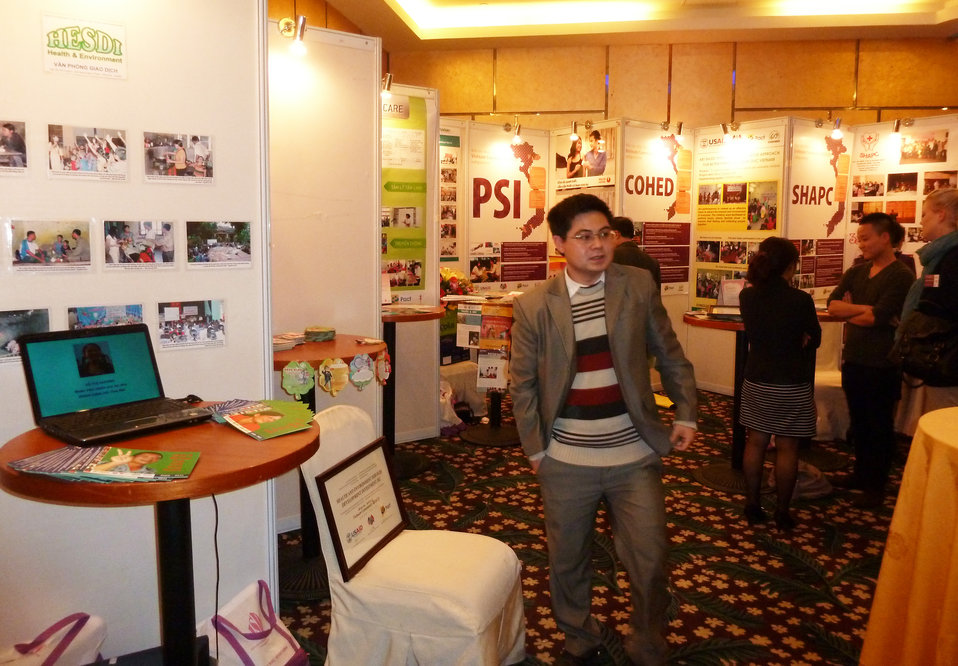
Implementing partners display their materials at the Community REACH workshop

Community REACH project close-out with USAID and implementing partner, Pact